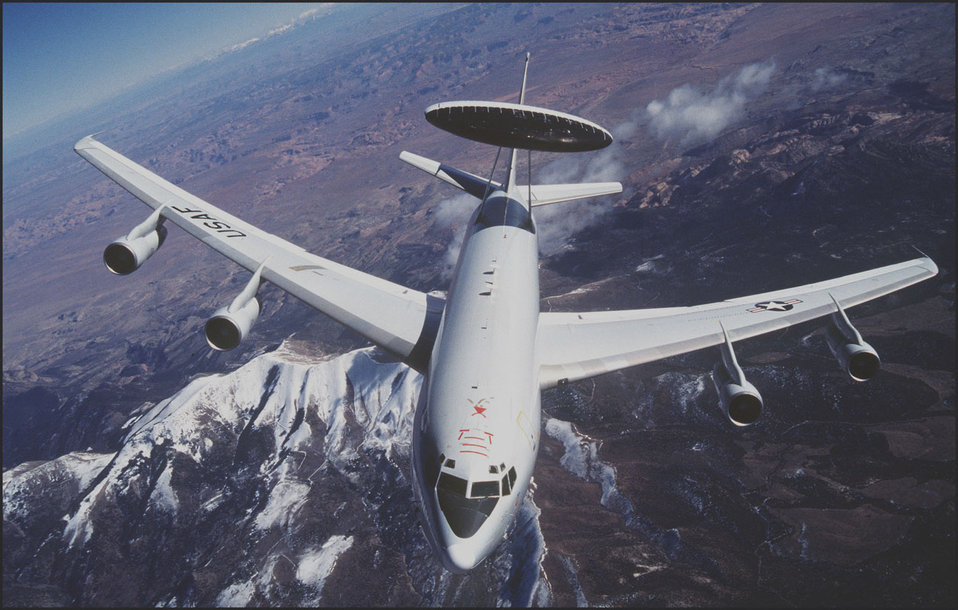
E-3 Sentry

FILE PHOTO -- The E-3 Sentry is a modified Boeing 707/320 commercial airframe with a rotating radar dome. The dome is 30 feet in diameter, 6 feet thick and is held 11 feet above the fuselage by two struts. It contains a radar subsystem that permits surveillance from the Earth's surface up into the stratosphere, over land or water. The radar has a range of more than 200 miles for low-flying targets and farther for aerospace vehicles flying at medium to high altitudes.